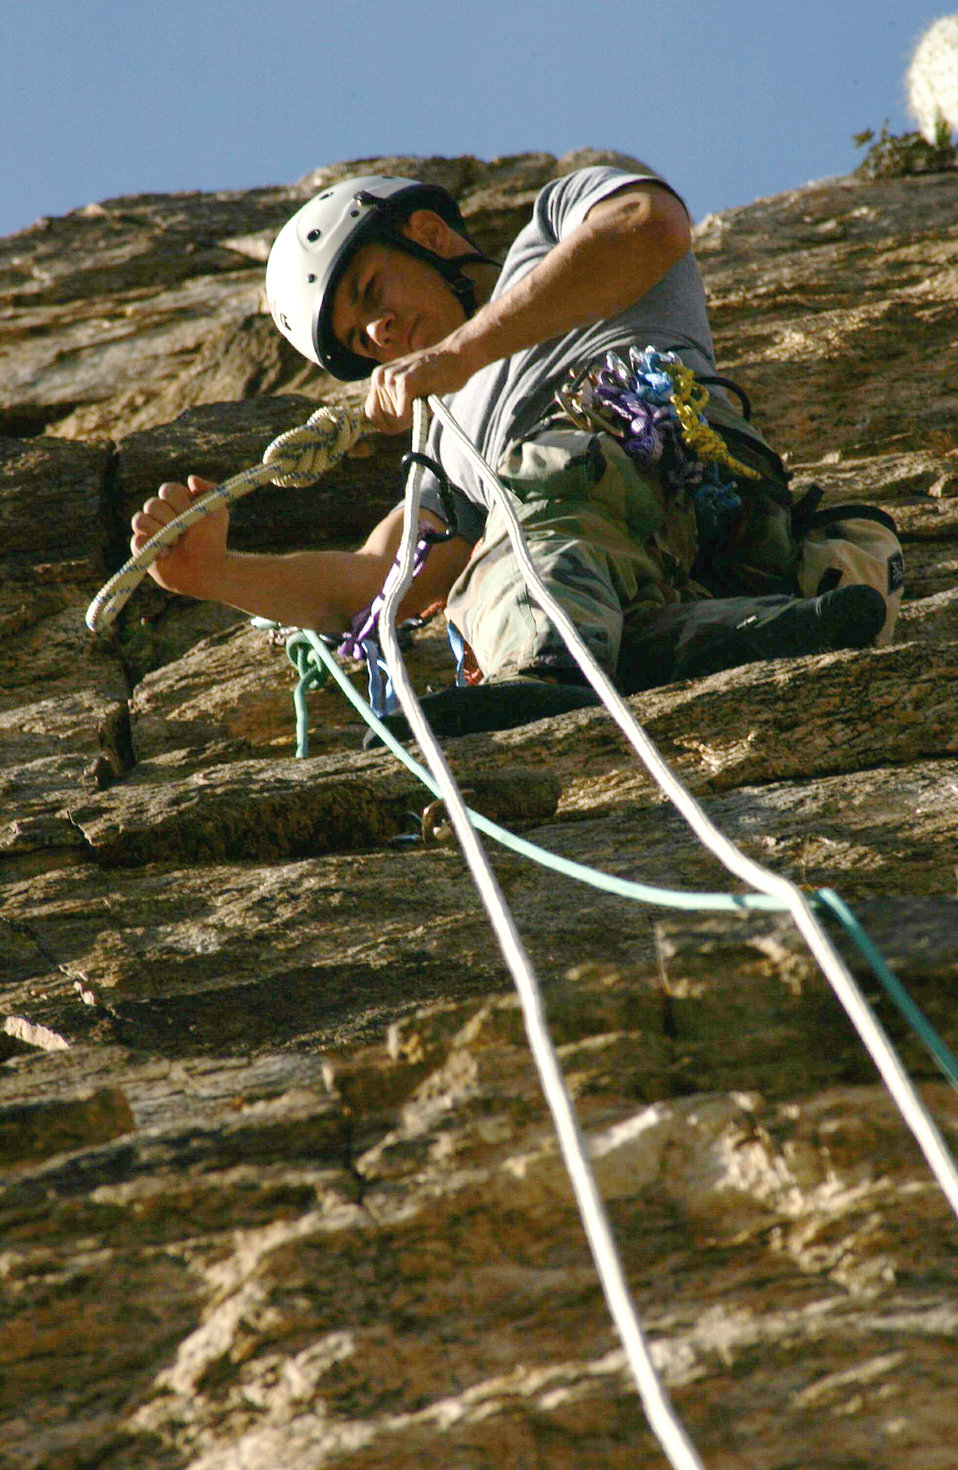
Learning the ropes

TUSCON, Ariz. -- Staff Sgt. Ivan Eggel checks his line while ascending Mount Lemmon here during a training mission. He is a pararescueman assigned to the 563rd Rescue Group at nearby Davis-Monthan Air Force Base.